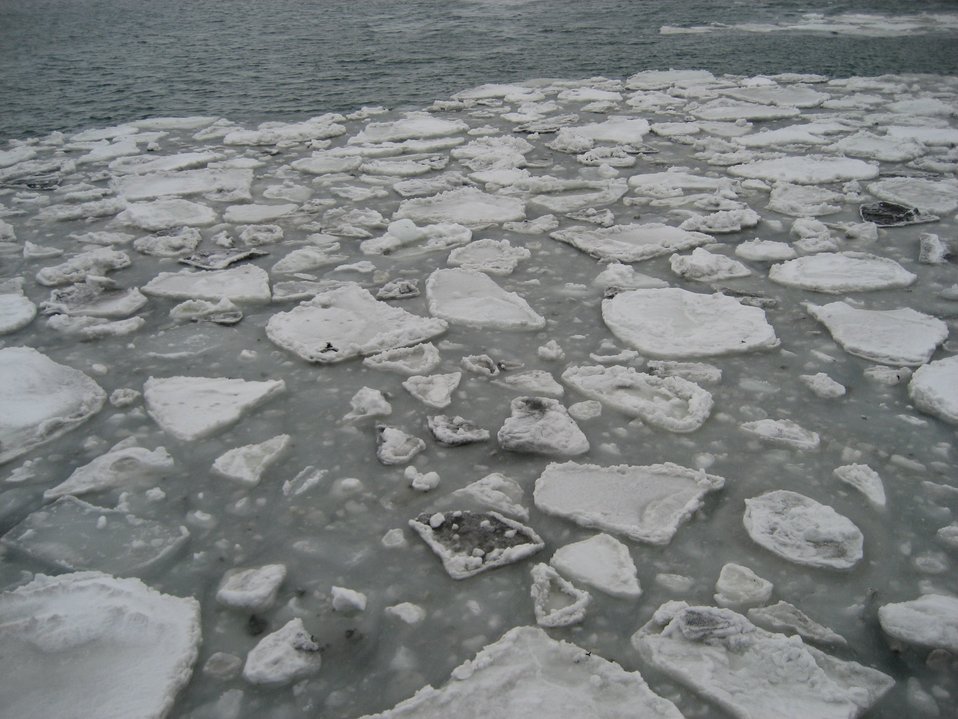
Broken ice in the harbor at St. Paul, Pribilof Islands.